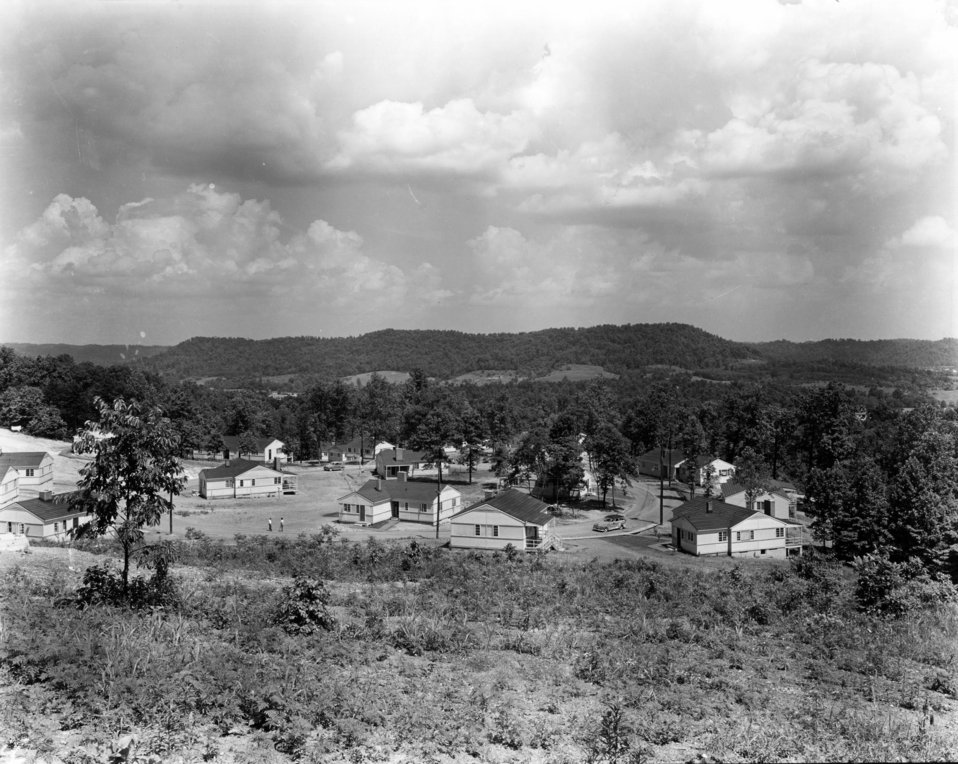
Housing at Oak Ridge